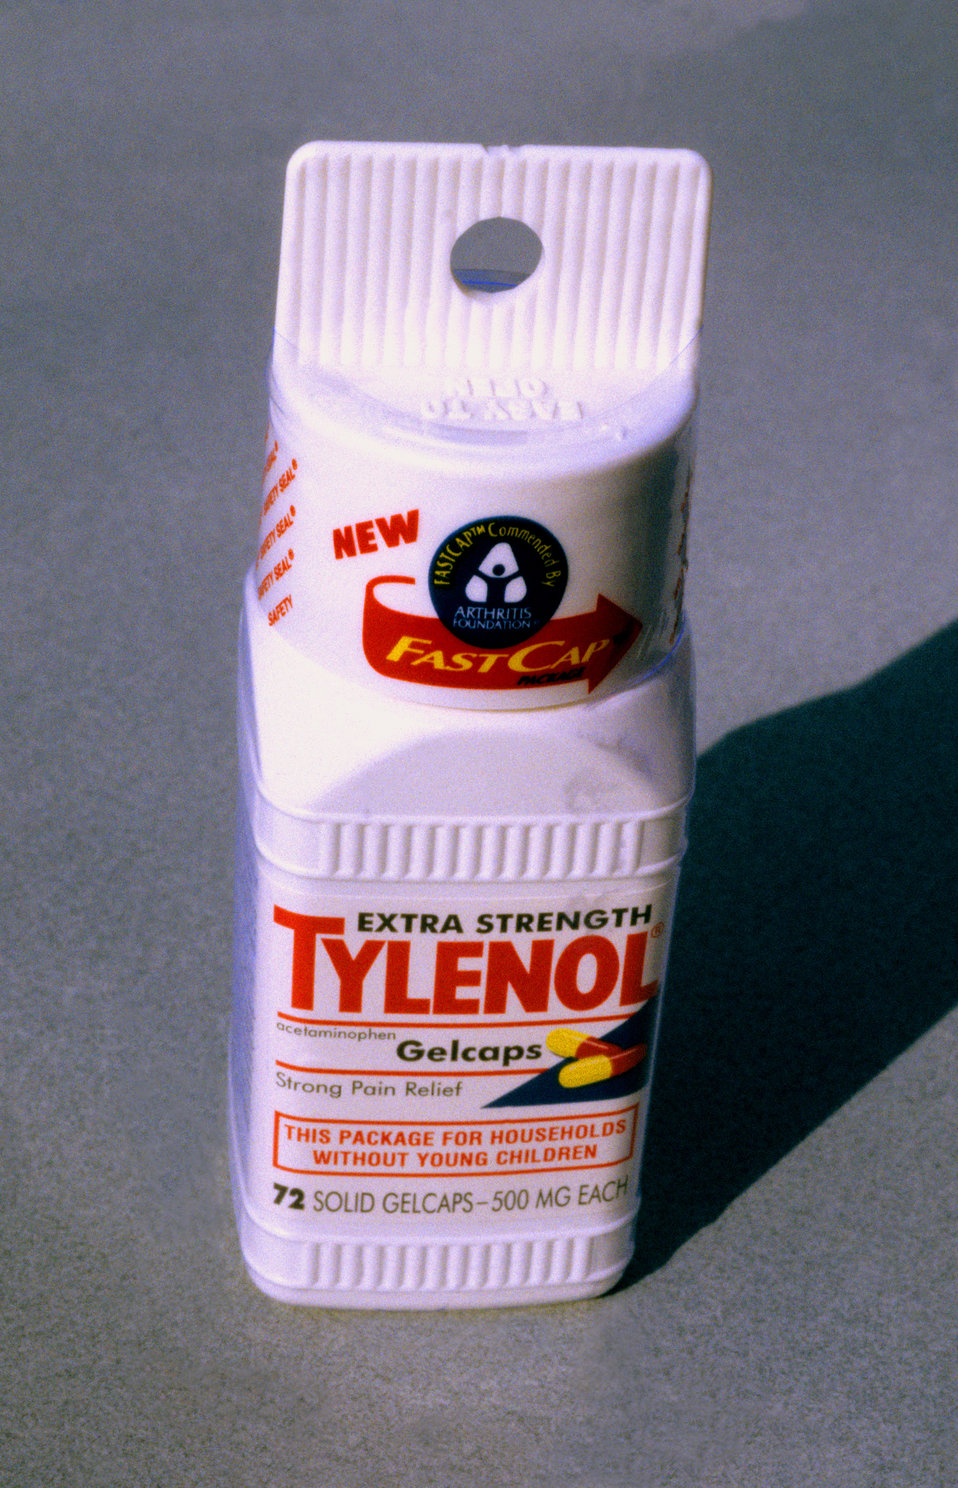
This is one of two PHIL images, (see PHIL# 9132), depicting an example of an easy-open Tylenol� pill bottle. This design made it easier for those with hand strength, and grasp problems to open the bottle. The squared-off, flanged cap with its rounded edges, created a shape which had sides that one could firmly grasp, in order to prevent rotation. The larger then normal sized bottle also helped it fit better in an adult's hands, and in the case of an arthritis patient, made it easier to close as well. Such a design illustrated how concern was paid to those with mobility impairments of the hands, but lead to a design that benefited anyone who might purchase this medication.